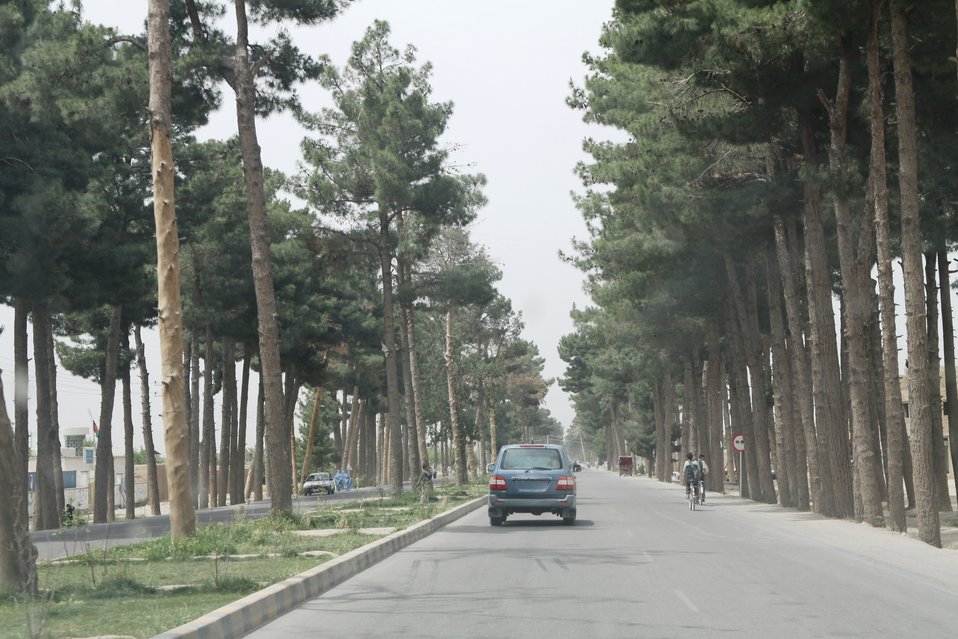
100525 Hirat Marble Conference 568